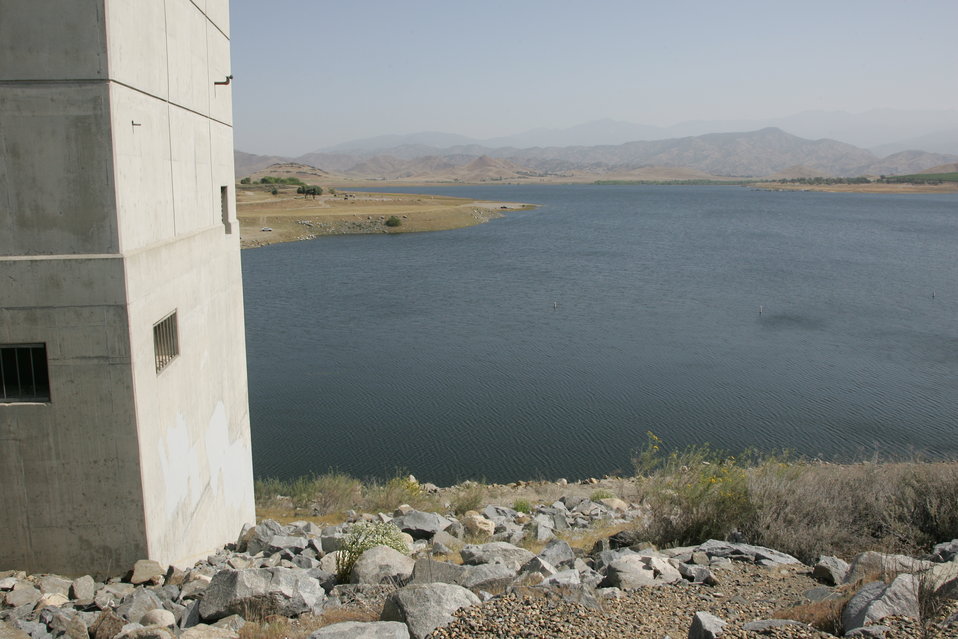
Success Dam

Looking northeast from the control structure at Success Dam, located near Porterville, Calif., May 1, 2007. The U.S. Army Corps of Engineers Sacramento District completed construction of Success Dam in 1961 and the reservoir provides flood risk management, water storage and recreational benefits to the local area.